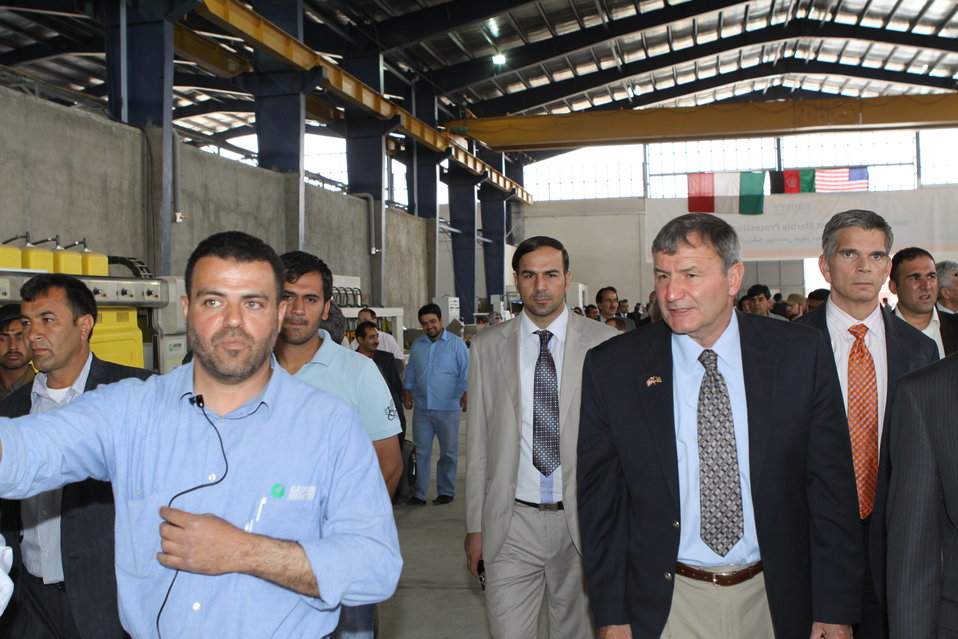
100525 Hirat Marble Conference 432